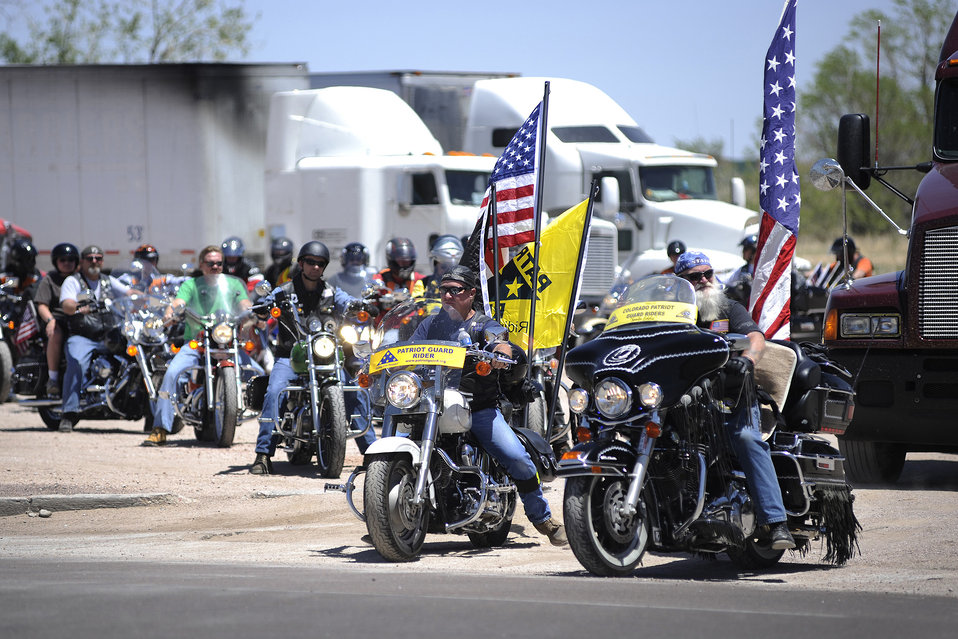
Traveling Vietnam Wall

Patriot Guard Riders prepare to depart Colorado Springs, Colo., for an escort ride June 7, 2011, to Fort Carson, Colo. Approximately 35 riders escorted the traveling Vietnam Wall Memorial.